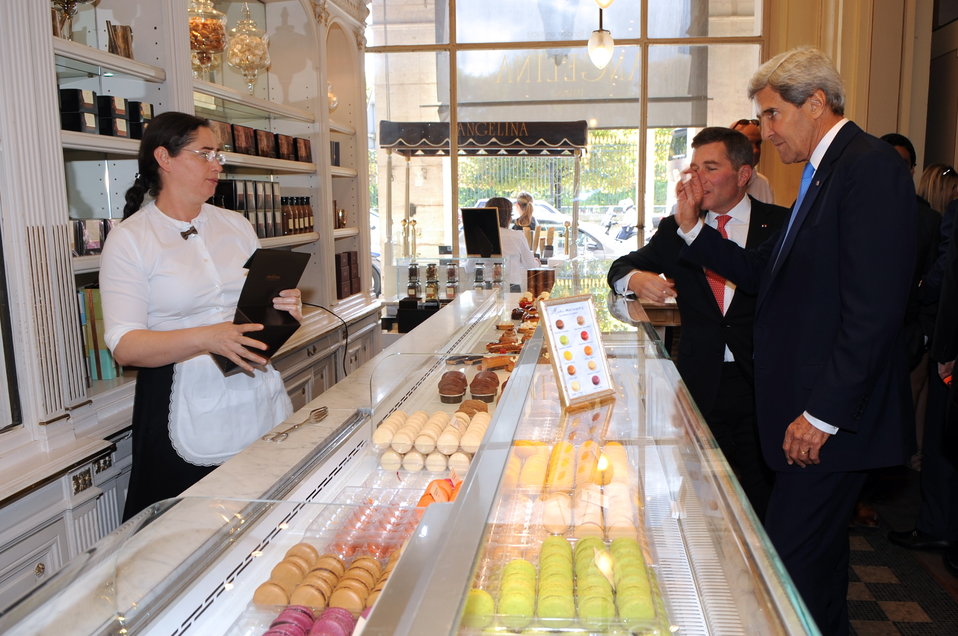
Secretary Kerry Stops at a Parisian Pastry Shop

U.S. Secretary of State John Kerry and U.S. Ambassador to France and Monaco Charles Rivkin visit the Angelina pastry shop in Paris, France after a series of meetings on September 8, 2013.